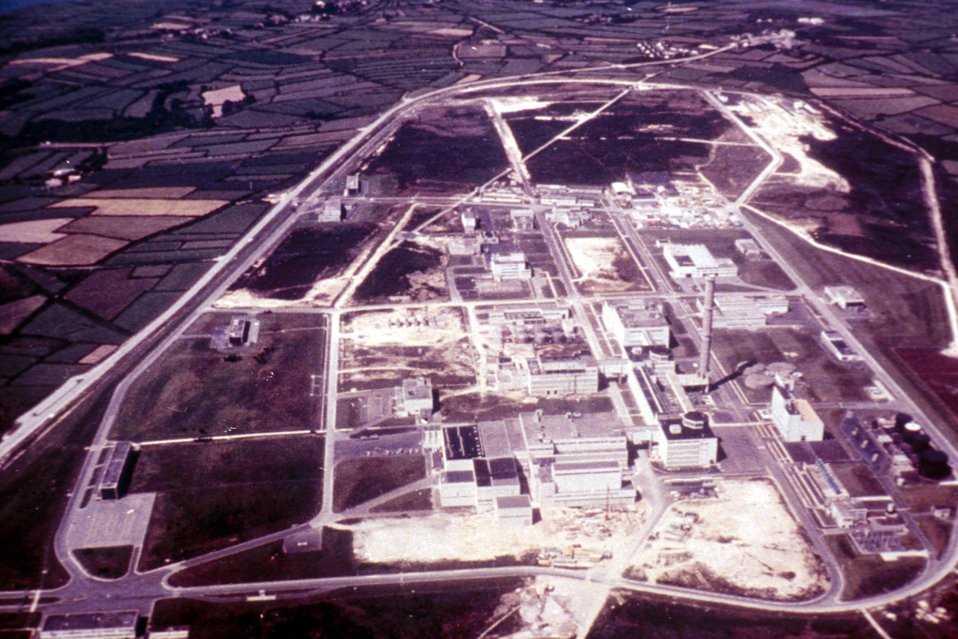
Vue du Centre de la Hague (C.E.A.).